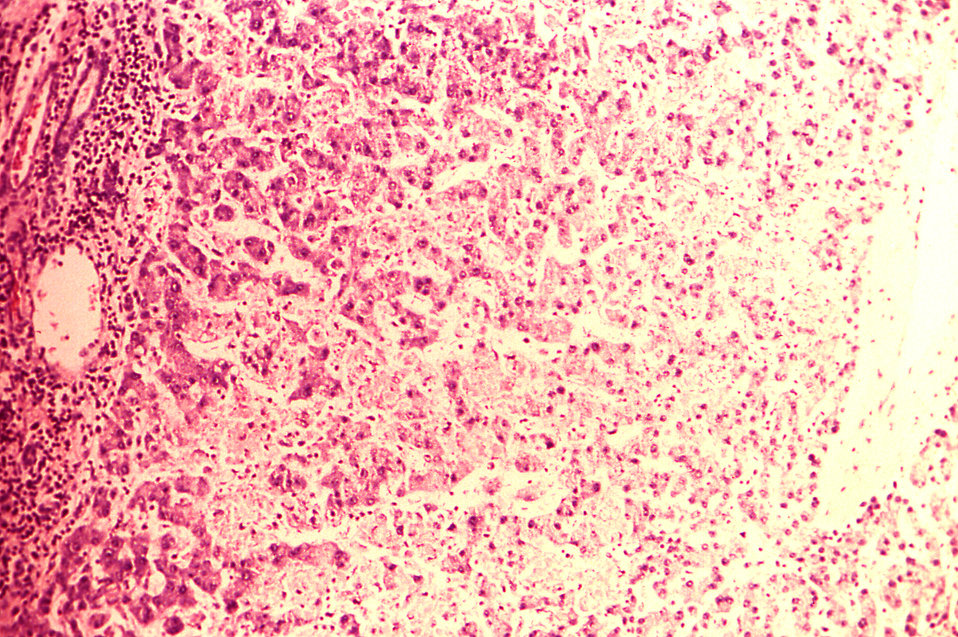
Under a magnification of 100X, this hematoxylin-eosin-stained (H&E) photomicrograph depicts the cytoarchitectural changes found in a liver tissue specimen extracted from a Lassa fever patient. In this particular view you'll note a region of 'focal necrosis without specific topographic distribution, thereby, isolating some layers of recognizable hepatocytes. There are numerous pycnotic nuclei, and dense infiltrates, predominantly of lymphocytes, within the periportal space.'.